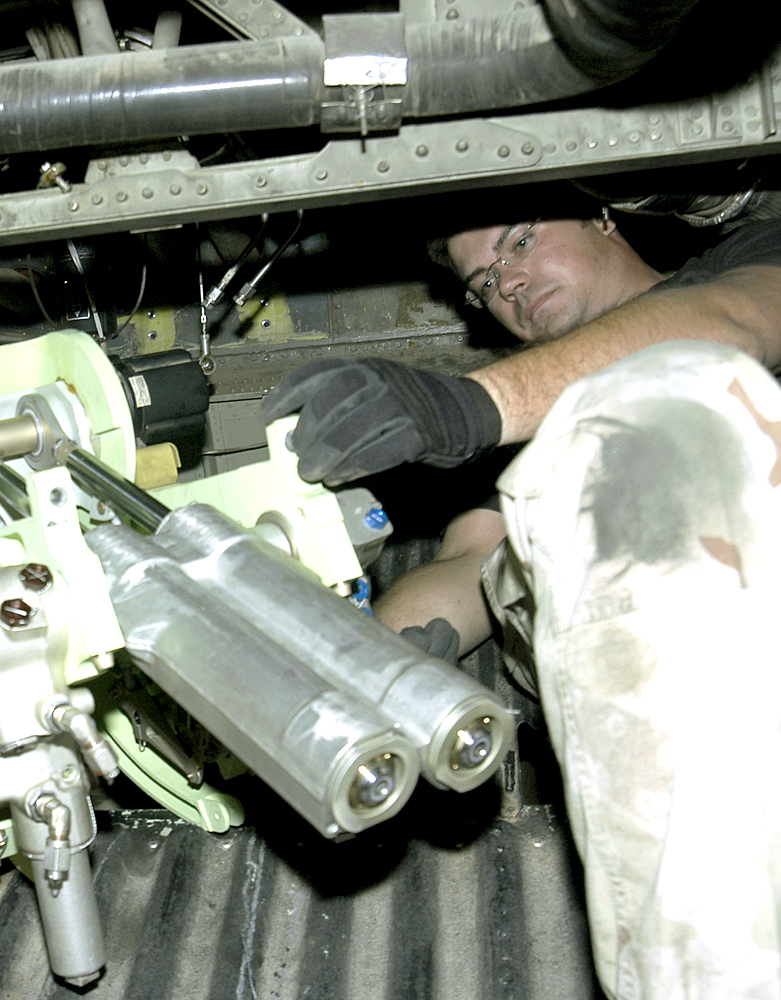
Stranded Herc

MOSUL, Iraq (AFPN) -- Hydraulics specialist Staff Sgt. David Harrelson moves a tail elevator booster pack into place on a C-130 Hercules stranded in Mosul, Iraq. The pack lets the rear wings move vertically, allowing the aircraft to ascend or descend in flight. He and crew chief Senior Airman Brian Kundick came here Nov. 12 to help get the cargo plane back in the air. The maintainers are deployed to Iraq with the 43rd Aircraft Maintenance Squadron from Pope AFB, N.C.